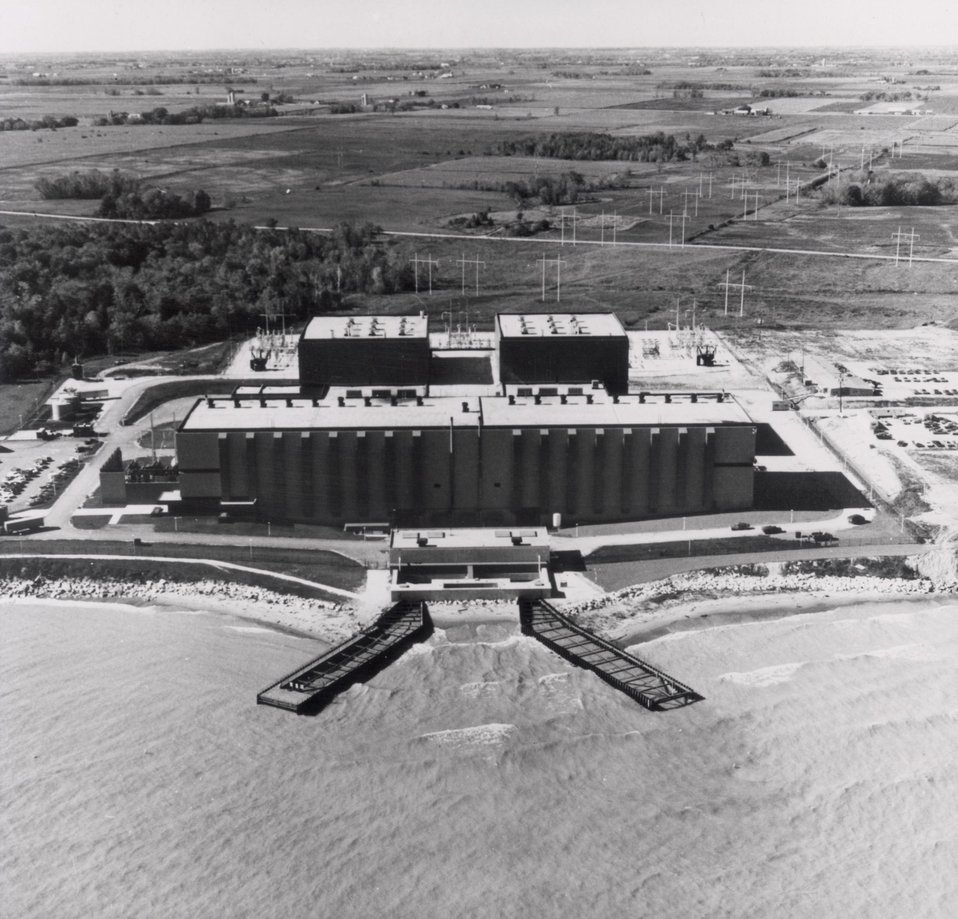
POINT BEACH NUCLEAR PLANT UNITS 1& 2...is operated by Wisconsin Electric Power Co. and Wisconsin Michigan Power Co. Circa 1973.